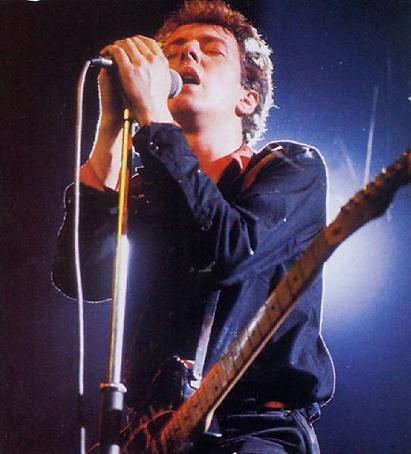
joe strummer singing